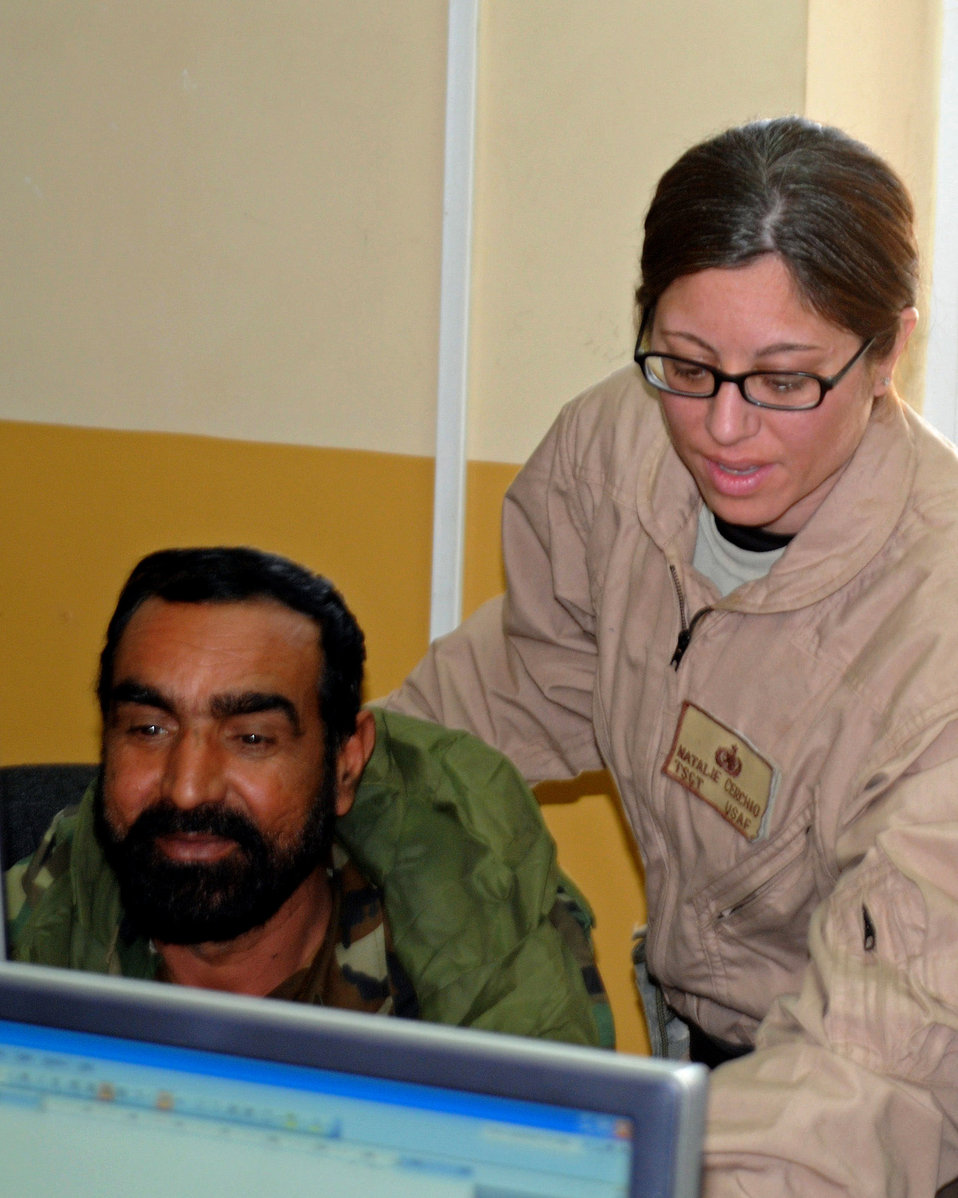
Airmen mentor Afghan national army

Tech. Sgt. Natalie Cerchio gives computer instruction to an Afghan national army colonel Feb. 20 at Kabul, Afghanistan. Sergeant Cerchio, assigned to the 755th Expeditionary Support Squadron, is one of the Airmen mentors who work with ANA soldiers to help them improve upon their logistics skills. Part of the training is to teach them to use computers to track their supplies.